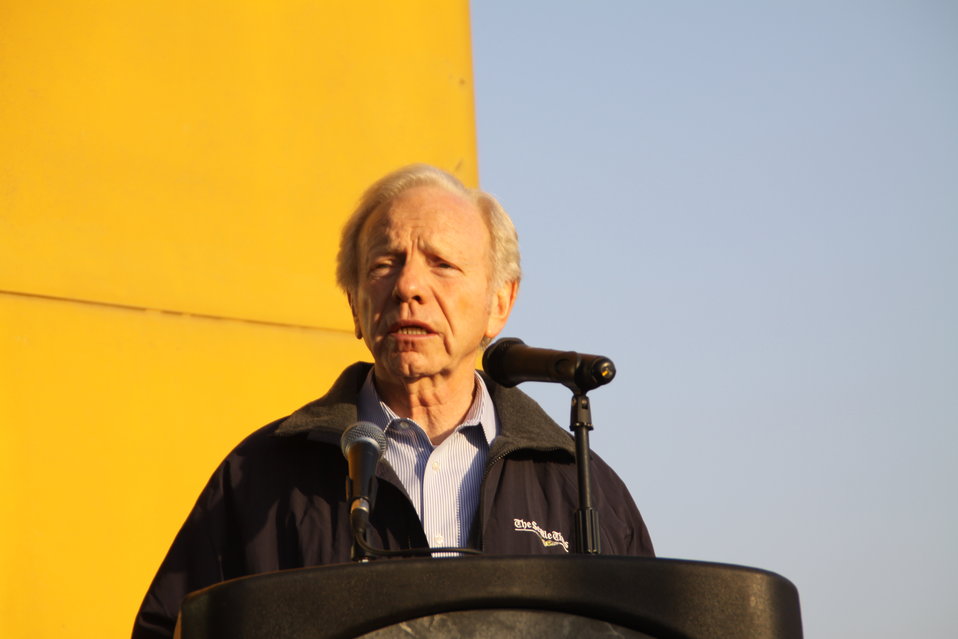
Senator Lieberman